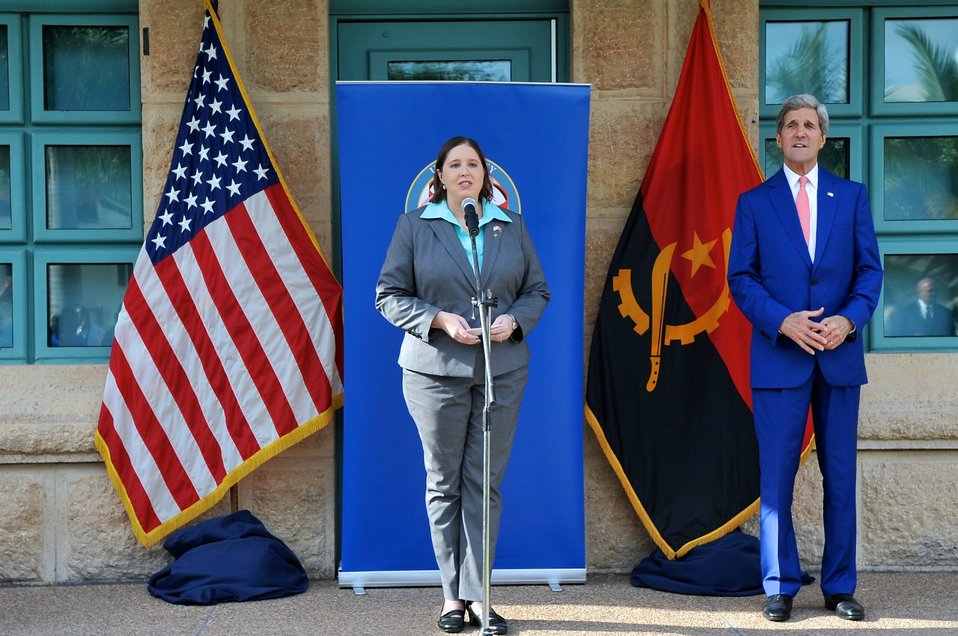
Charge Merritt Welcomes Secretary Kerry to Embassy Luanda

Charge d'Affaires Heather Merritt welcomes U.S. Secretary of State John Kerry before he addresses employees and family members at Embassy Luanda during a visit to Angola on May 4, 2014.